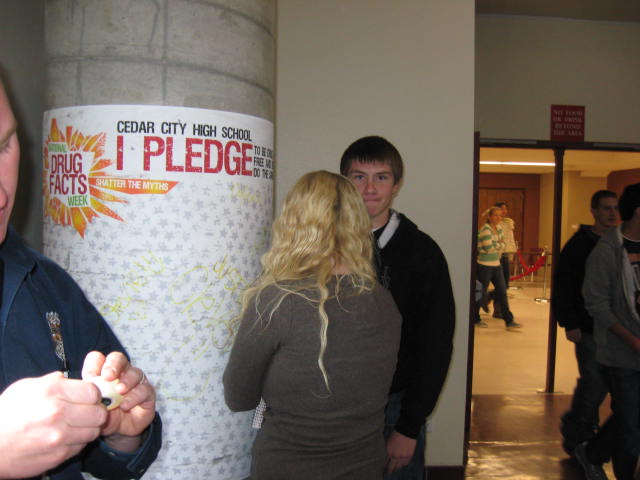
NDFW Assembly in Cedar City, UT

The students signed a pledge to be drug and alcohol free.